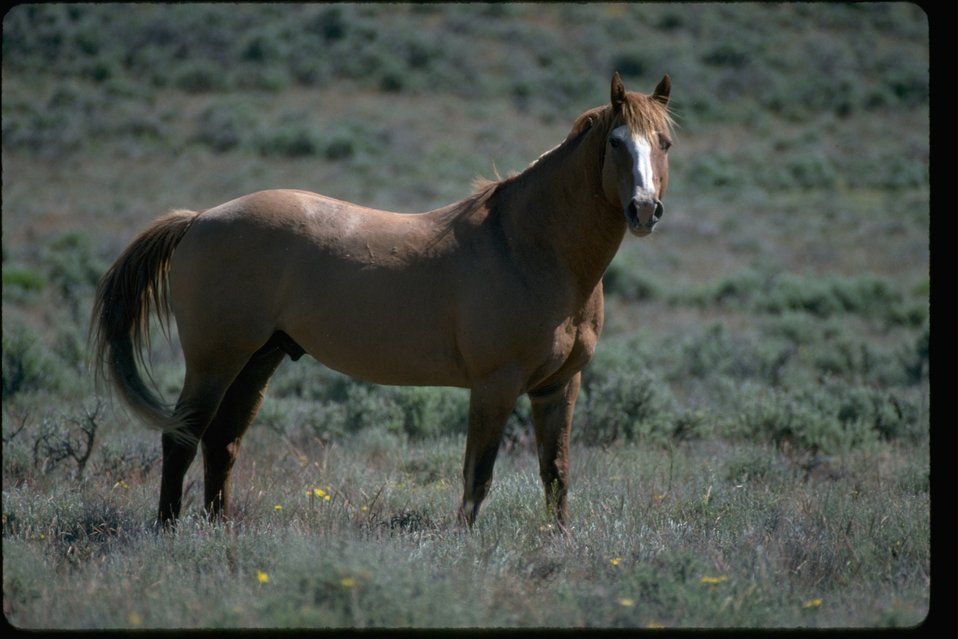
Lazarus," the dominant stallion in East Warm Springs Herd Management Area in the Burns District, Oregon.